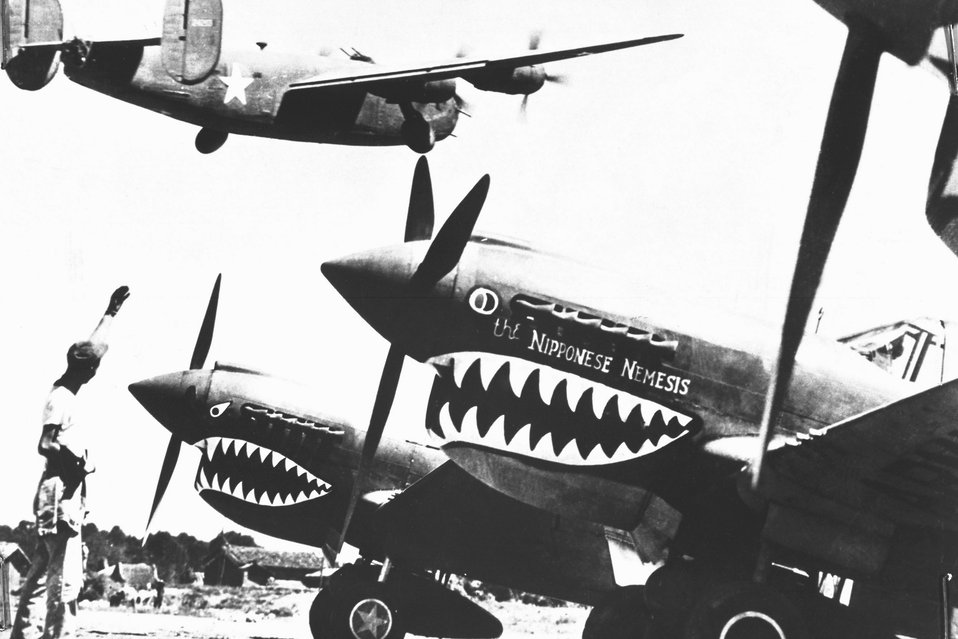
Liberator bomber crosses the shark-nosed bows of U.S. P-40 fighter planes

1940's -- Landing wheels recede as this U.S. Army Air Forces Liberator bomber crosses the shark-nosed bows of U.S. P-40 fighter planes at an advanced U.S. base in China. An American soldier waves good luck to the crew, off to bomb Japan. 1943 Air Force Photo